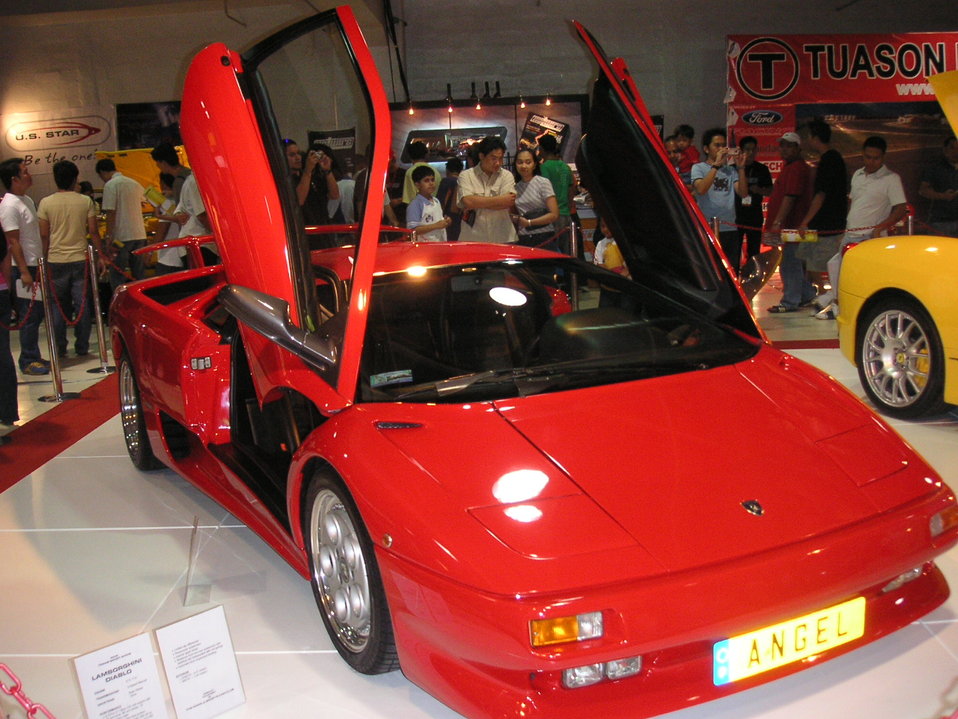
red Lamborghini Diablo, original base model